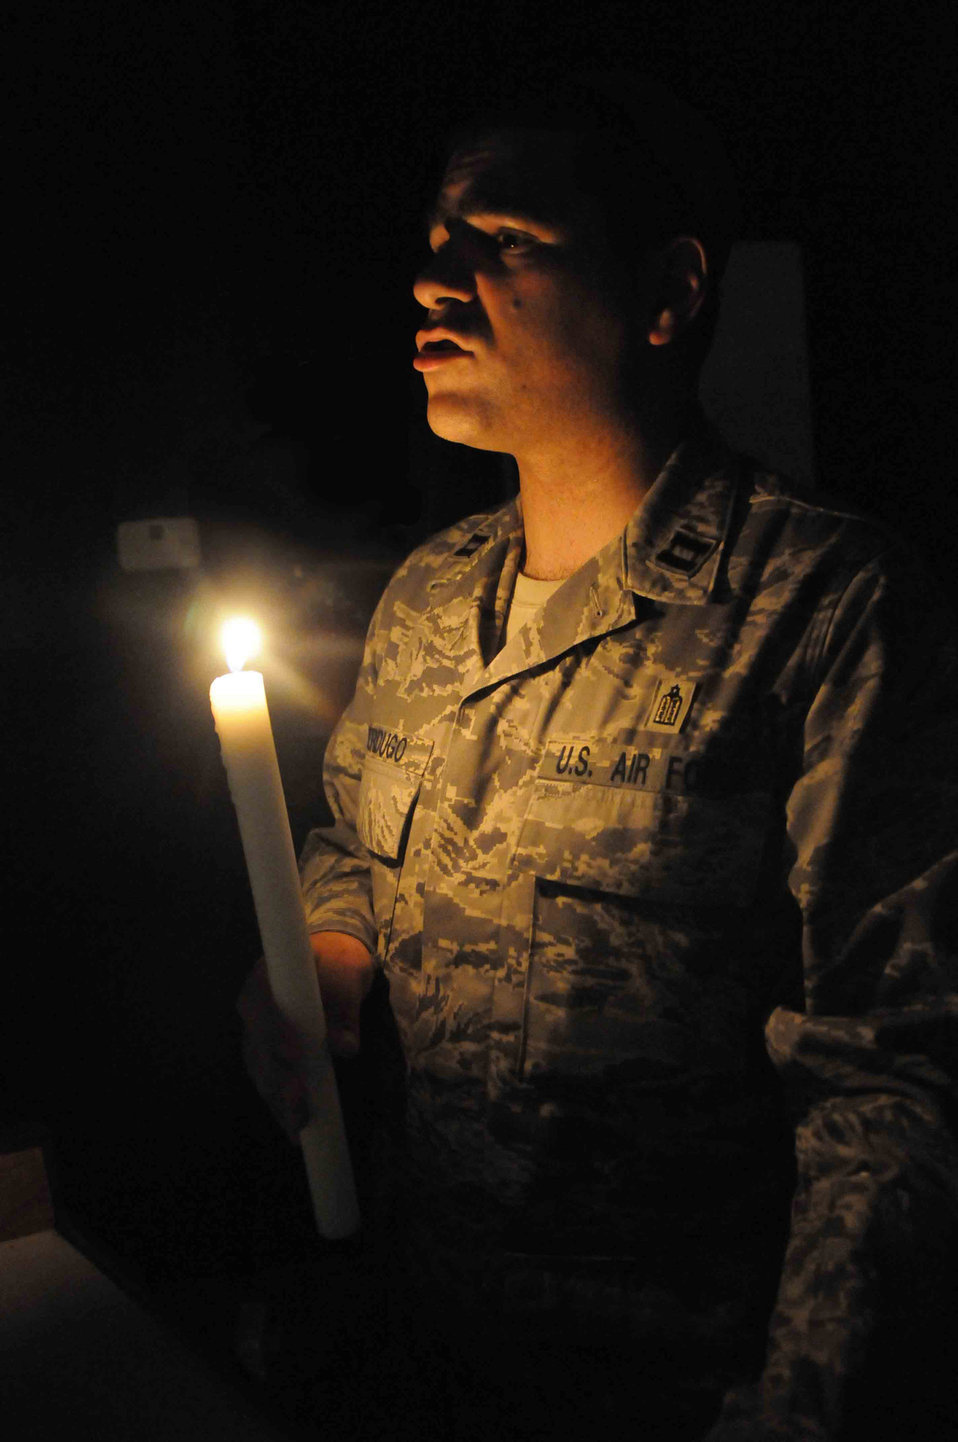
15th generation rabbi: Helping servicemembers keep faith

Rabbi (Capt.) Raphael Berdugo leads a prayer in Yiddish for more than 30 members May 2 at a Southwest Asian air base. The 15th-generation rabbi is one of nine Jewish religious leaders in the Air Force and the only one currently deployed to Southwest Asia. Rabbi Berdugo is the 379th Air Expeditionary Wing chaplain deployed from McGuire Air Force Base, N.J.